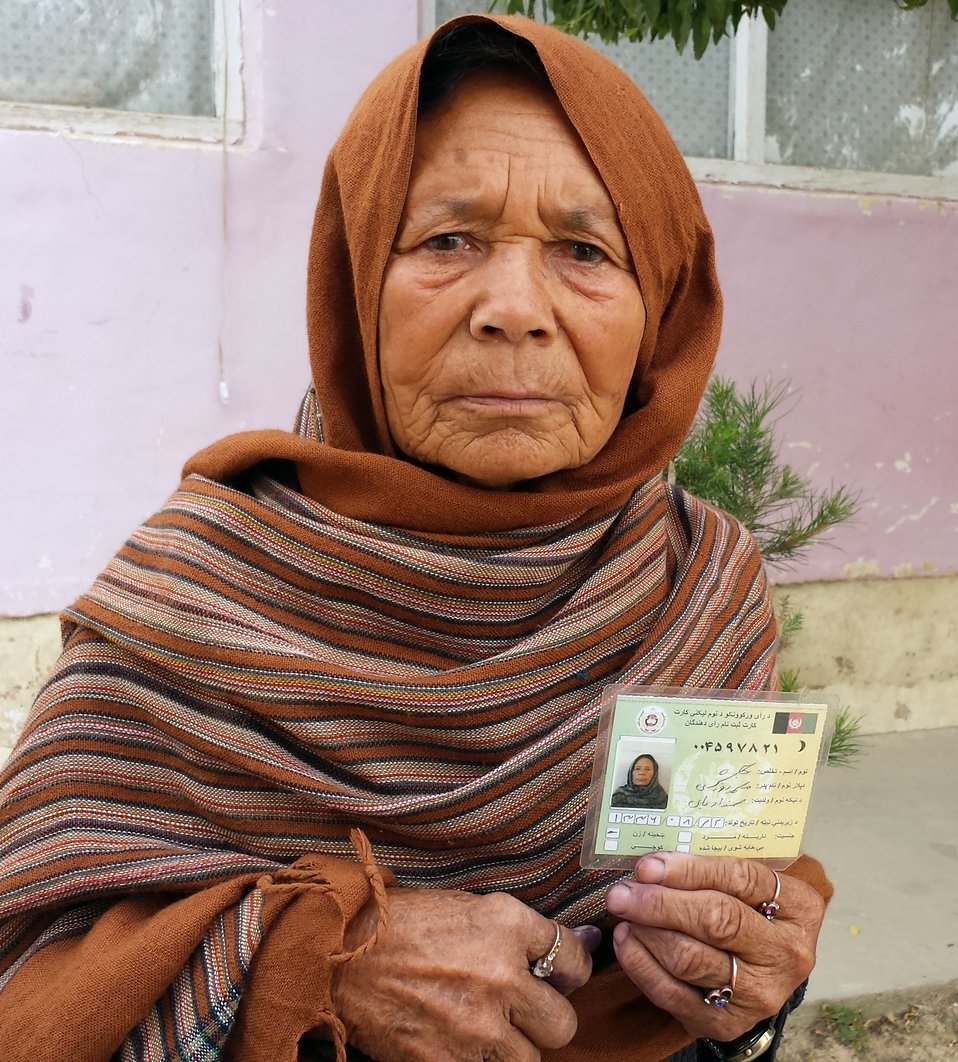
A woman displays her voting card in Samangan province.